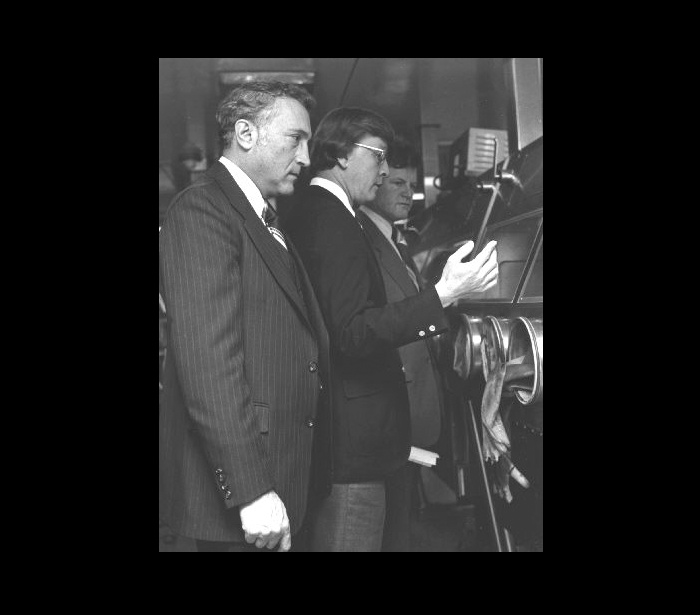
Senator Richard Schweiker, Dr. Roslyn Robinson, and Senator Edward Kennedy in CDC Maximum Containment Lab during Senate Hearing on Legionnaires' Disease, CDC, November 9, 1977.